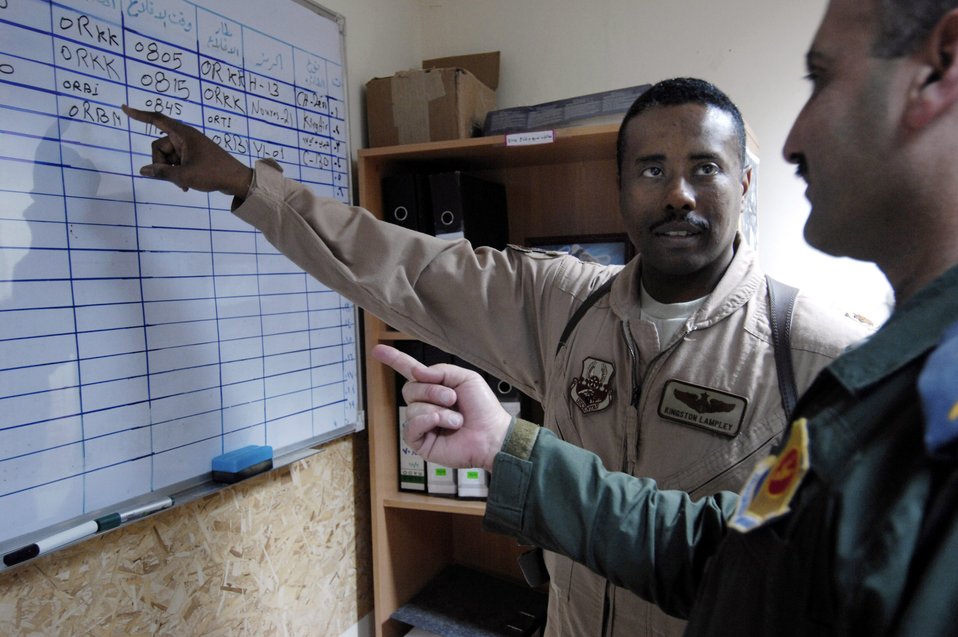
Airmen teach Iraqis Western-style command, control

Maj. Kingston Lampley advises an Iraqi air operations center officer about proper flight schedules at the Iraqi Air Operations Center at Camp Victory, Iraq, May 28. Major Lampley is a military transition team member, advising Iraqi officers concerning the day-to-day operations in their air operations center. The Iraqi AOC is run completely by Iraqi military officers and advised by Air Force military transition team officers. The AOC MTT is responsible for teaching and preparing the Iraqi military to take over AOC operations independent from the U.S. military.